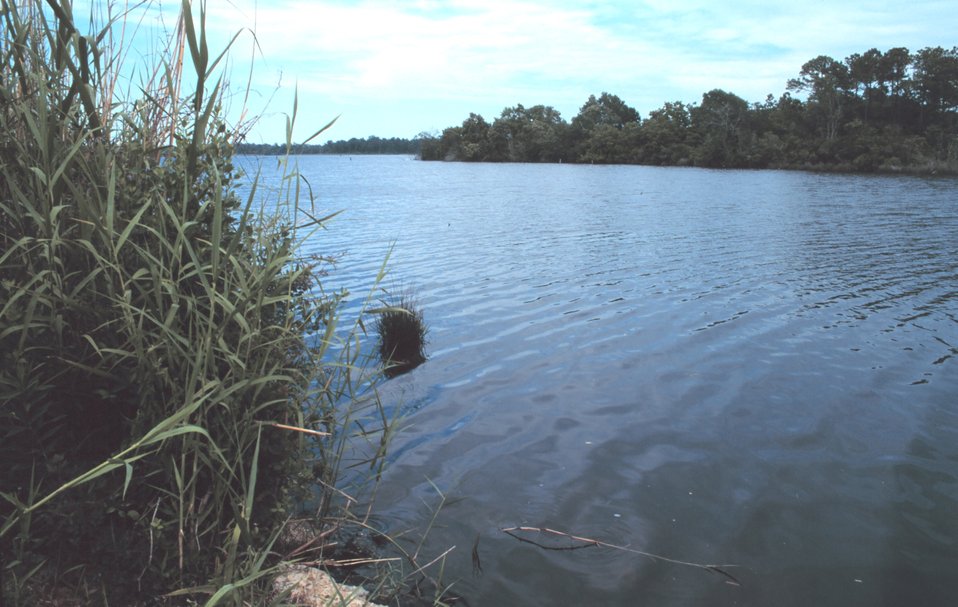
Coastal marsh area along the bay is home to fish, shellfish, and sea birds